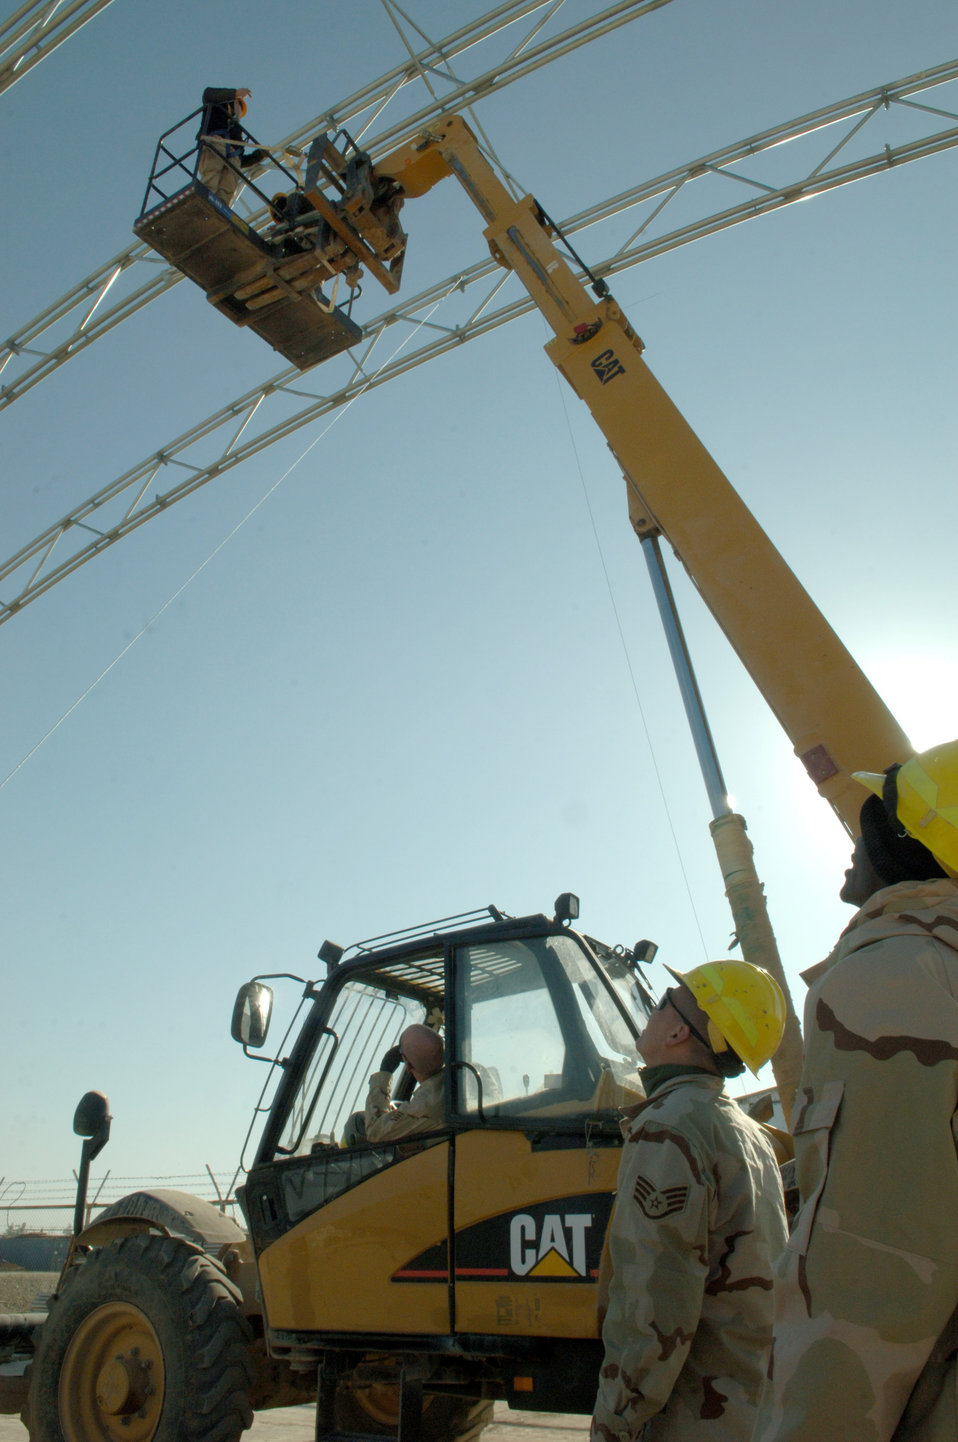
Shelter construction

Airmen from the 332nd Expeditionary Civil Engineer Squadron Structures look on as Senior Airman Brandon Braley gives directions to the crew on the ground Nov. 26 at the new Hunter Unmanned Aerial Vehicle shelter. The 20-day project at Balad Air Base, Iraq., will take approximately 3,200 man hours to complete.